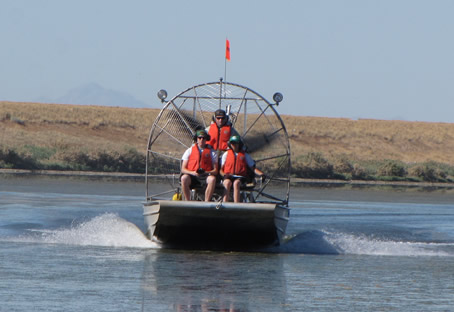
Using Airboats to Place Boundary Signs

Youth Conservation Corps crew ride in an airboat. The eight week program entailed the removal of a split rail fence around a public parking area and removal of approximately 1,000 feet of barbed wire fence. Boundary signs were placed in wet areas using airboats and a duck blind received a new coat of paint.